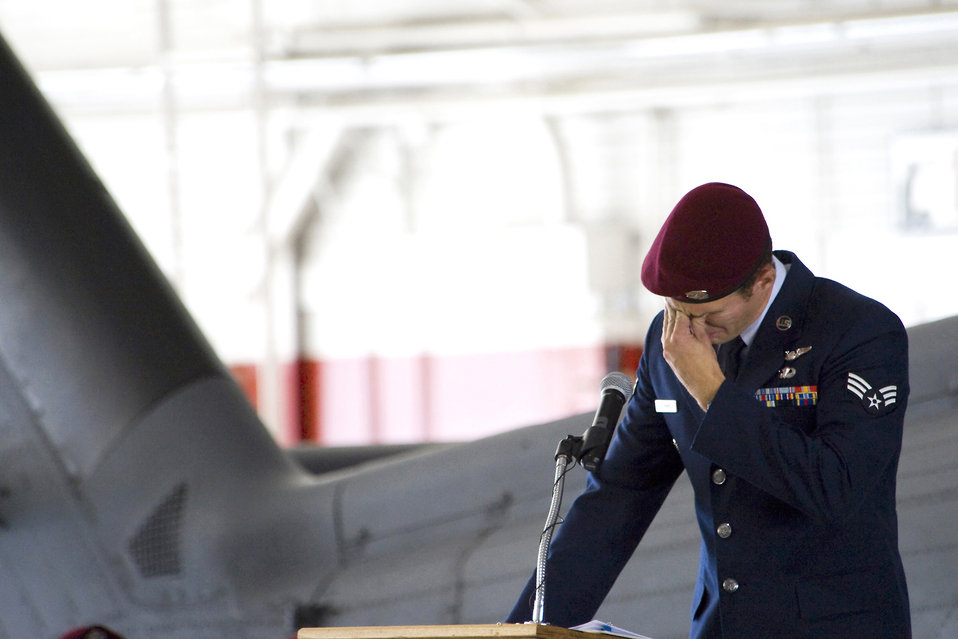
Nellis Airmen honor fallen comrades

Senior Airman Joshua Degenhardt pays his final respect to 1st Lt. Joel Gentz and Staff Sgt. David Smith during a memorial ceremony June 18, 2010, at Nellis Air Force Base, Nev. Lieutenant Gentz was a combat rescue officer assigned to the 58th Rescue Squadron and Sergeant Smith was a helicopter flight engineer assigned to the 66th Rescue Squadron.